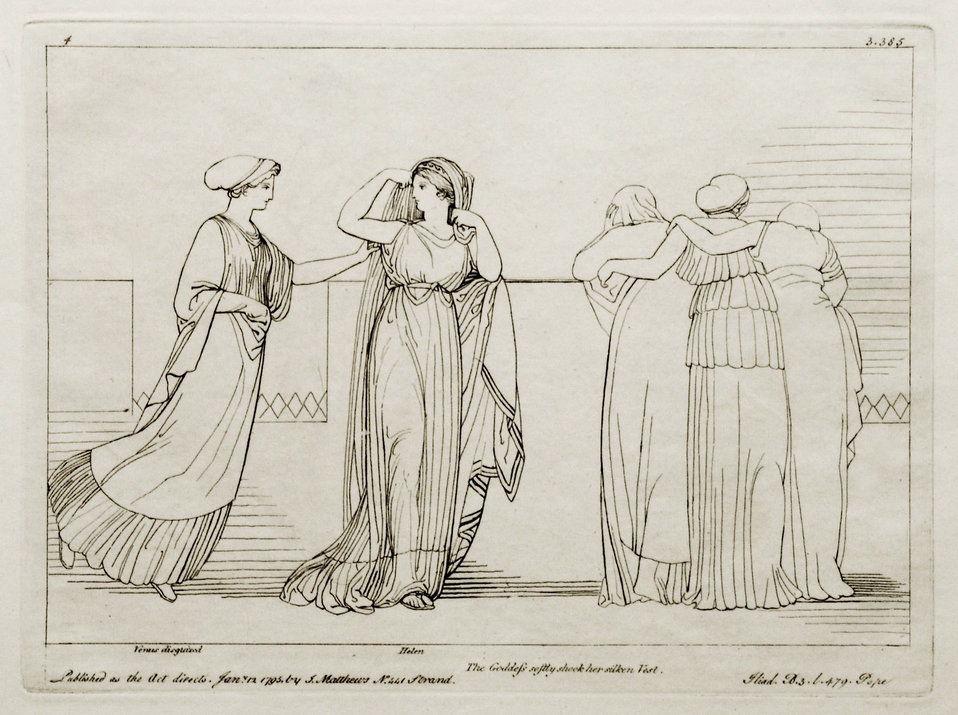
Deutsch: Kupferstich (1795) von Tommaso Piroli (1752 – 1824) nach einer Zeichnung (1793) von John Flaxman (1755 – 1826).